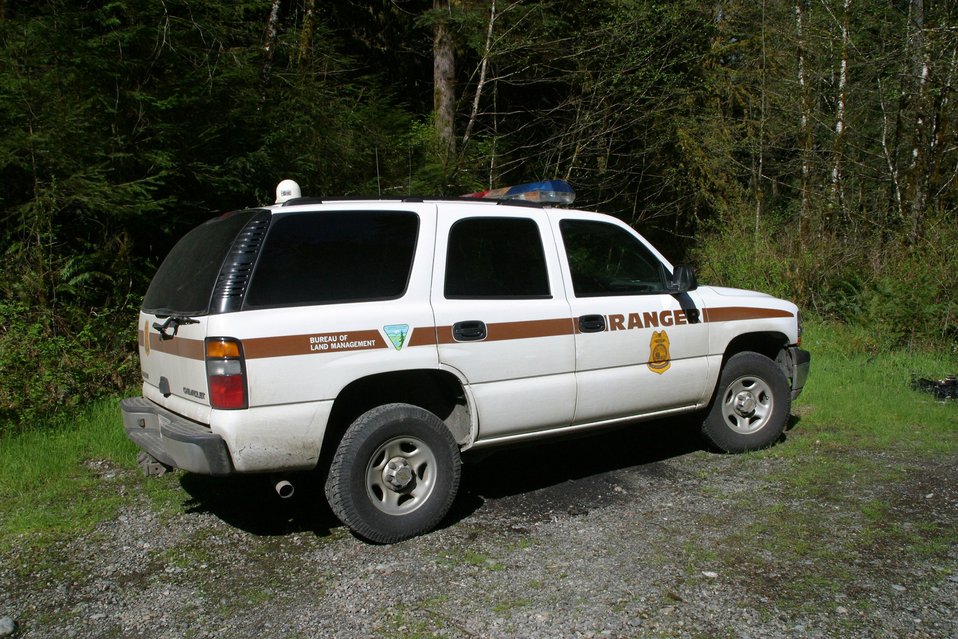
BLM District Rangers patrol thousands of acres of Public Forested Land in Western Oregon.